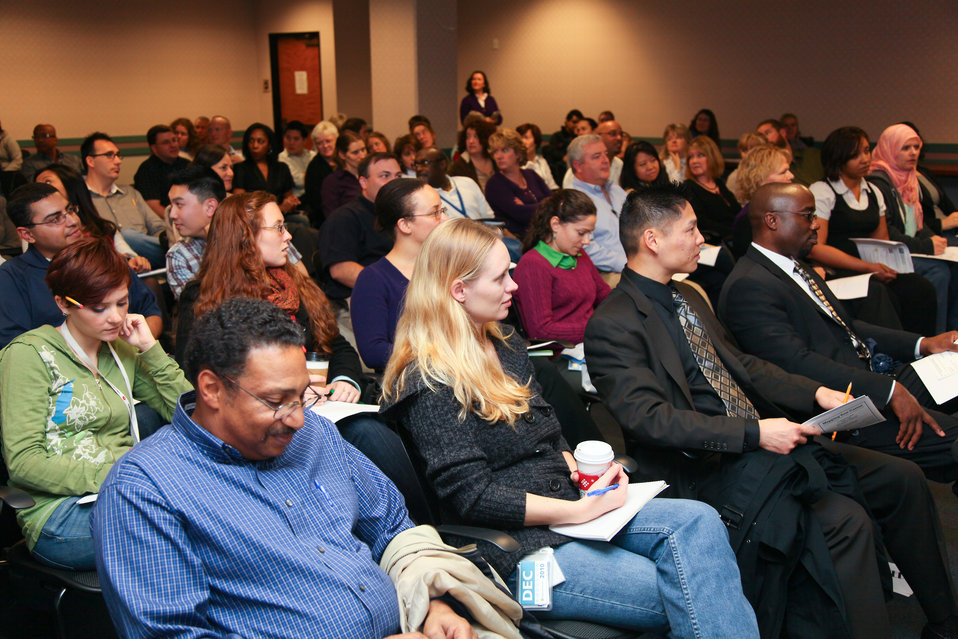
SACRAMENTO, Calif. (Dec. 14, 2010) - Employees with the U.S. Army Corps of Engineers Sacramento District attend a career workshop at the district’s headquarters building here Dec. 14. The workshop, titled 'Mapping Your Career,' was organized and sponsored by the district’s Equal Employment Opportunity office. Nationally certified career counselor Helen Scully was the guest speaker and facilitator for the workshop.